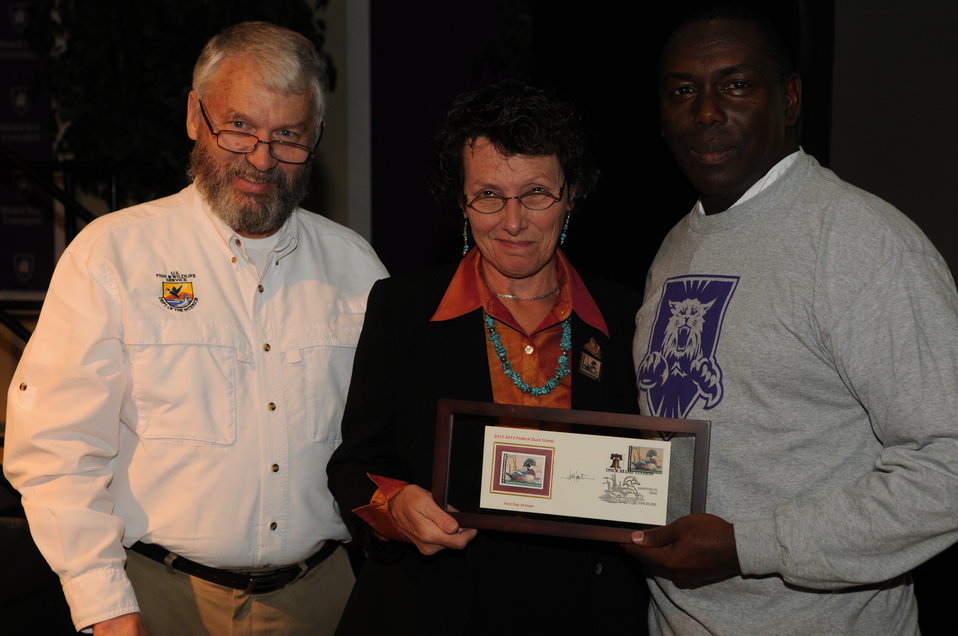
Judge Recognition

The U.S. Fish & Wildlife Service sponsored the 2012 Federal Duck Stamp Art Contest September 28 and 29 in Ogden, Utah, at Weber State University. A panel of five judges was responsible for choosing the art work used to design the 2013-2014 Migratory Bird Hunting and Conservation Stamp.